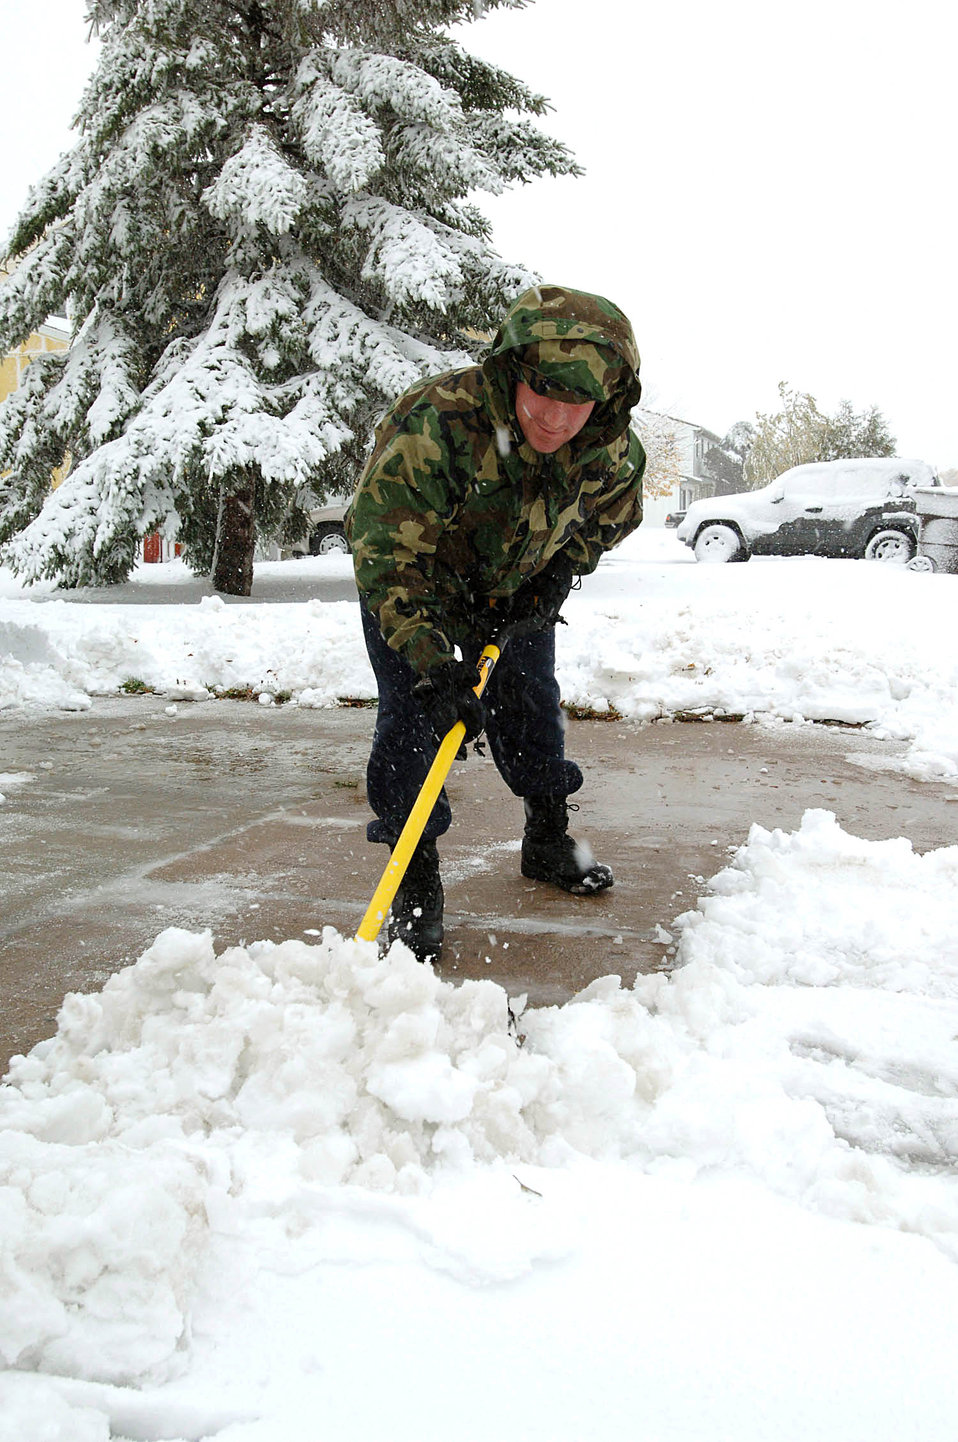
First snow

MINOT AIR FORCE BASE, N.D. -- Senior Airman Kevin O'Reilly clears his base housing driveway Oct. 5 here after the first snowfall of the year left 5 inches of snow to contend with. . Airman O'Reilly is assigned to the 5th Security Forces Squadron.